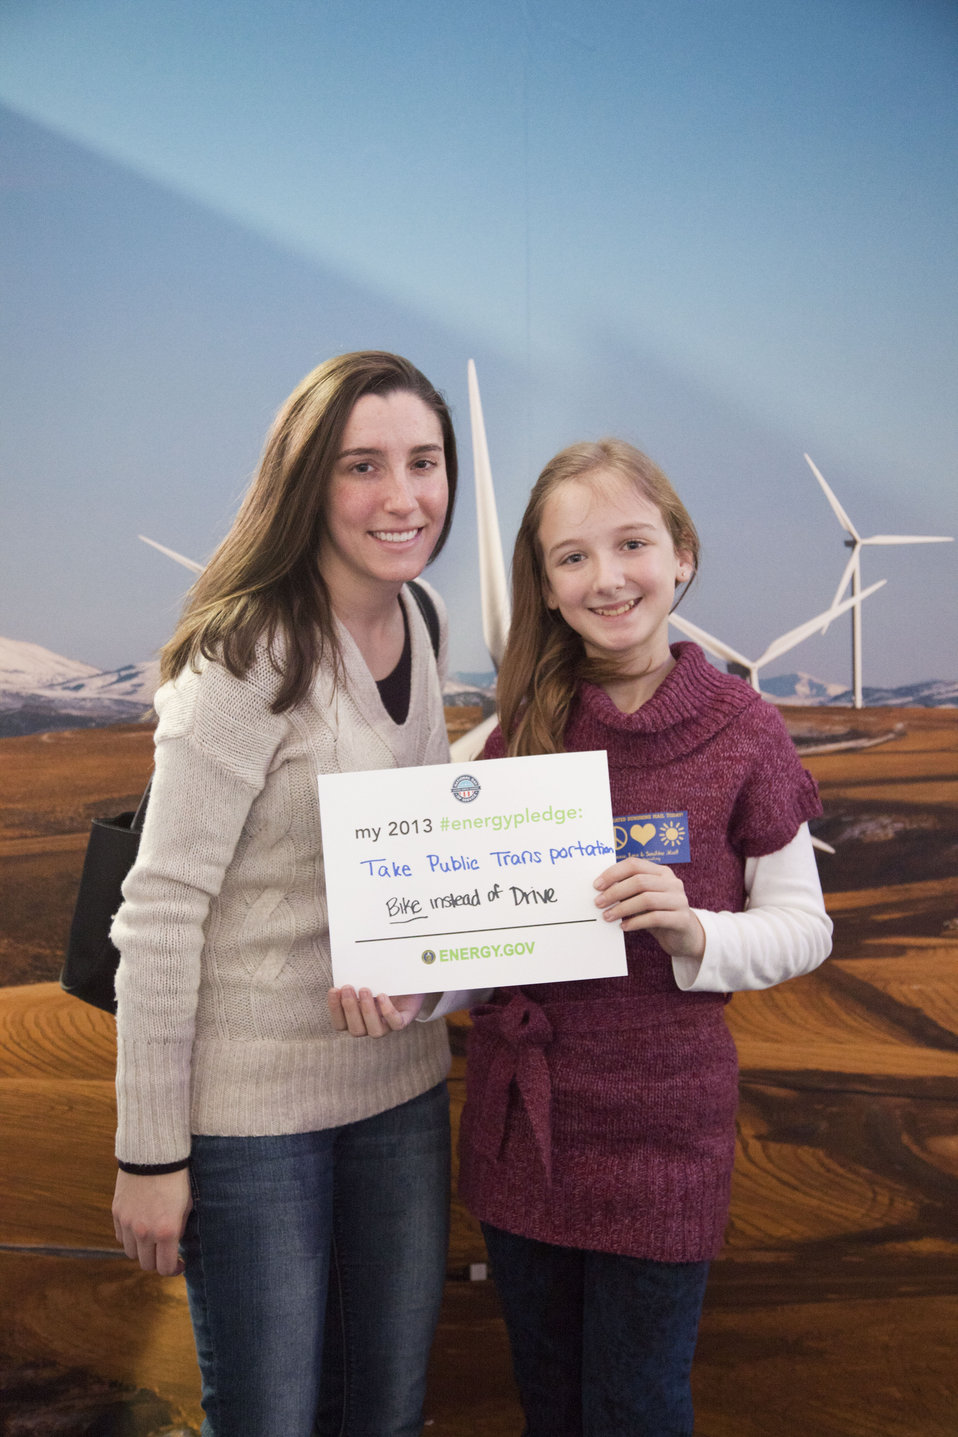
What's your #energypledge?